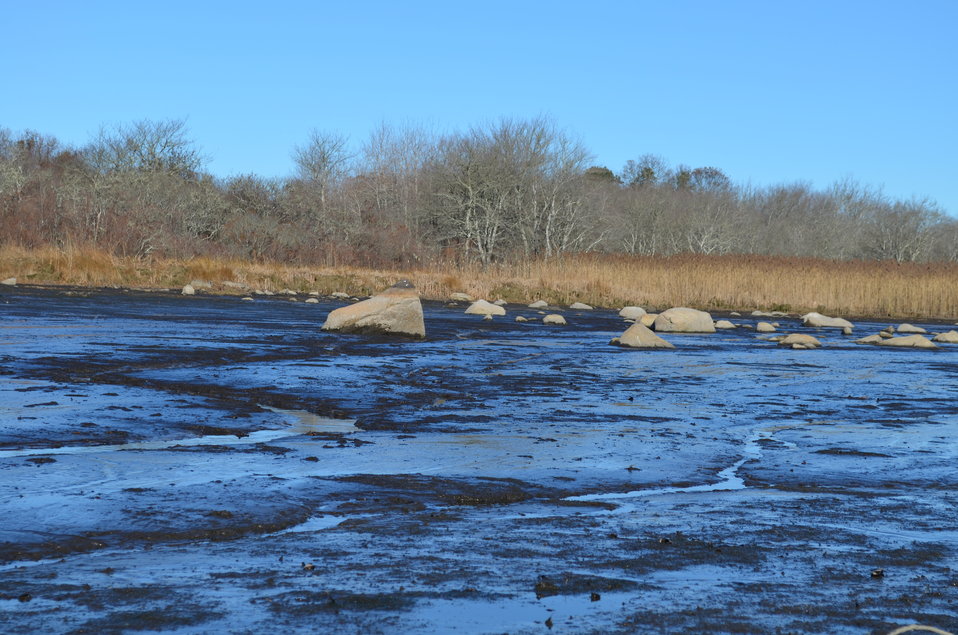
Small streams of freshwater at Trustom pond National Wildlife Refuge (RI)

Small streams of freshwater trickle through the saltwater and mud left behind from Hurricane Sandy.